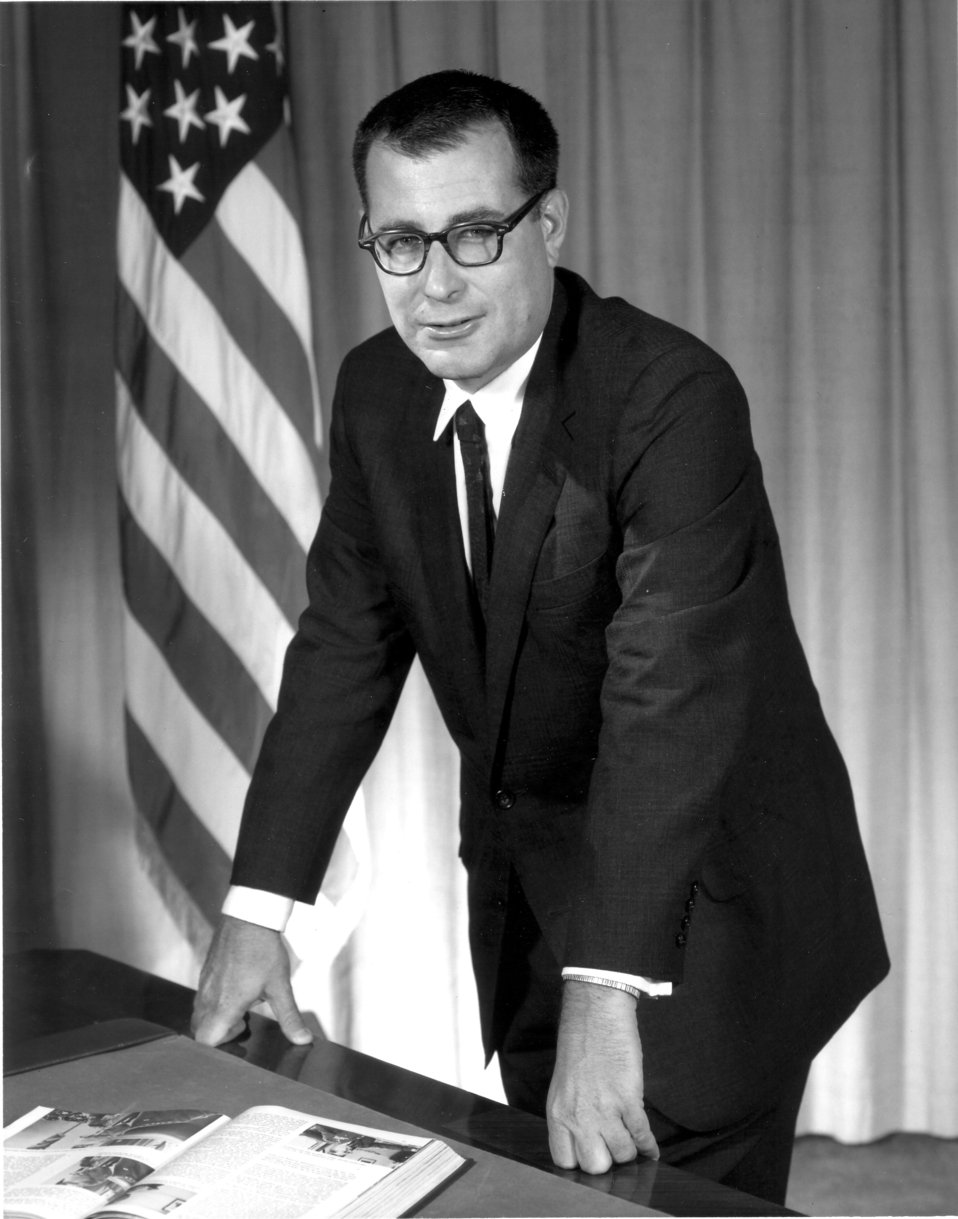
Dr. Harold Brown

1960's -- Dr. Harold Brown, Air Force secretary from 1965-1969